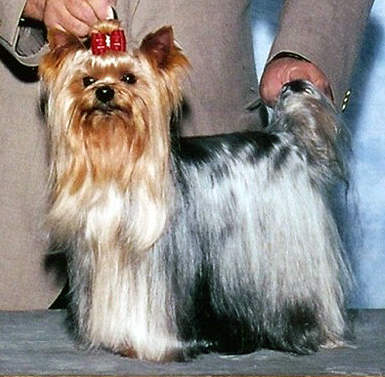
Italiano: Bellissimo campione di razza Yorkshire Terrier chiamato WA Mozart Dolce Sinfonia (Mozart). Questo bellissimo Yorkie ha ottenuto diversi campionati di bellezza in varie parti del mondo ed e' inoltre un famosissimo attore di Hollywood. Mozart e' di allevamento e proprieta' di Sabrina A. Parisi. A Yorkshire Terrier named (American) Ch. WA Mozart Dolce Sinfonia (callname Mozart) owned and bred by Sabrina A. Parisi.